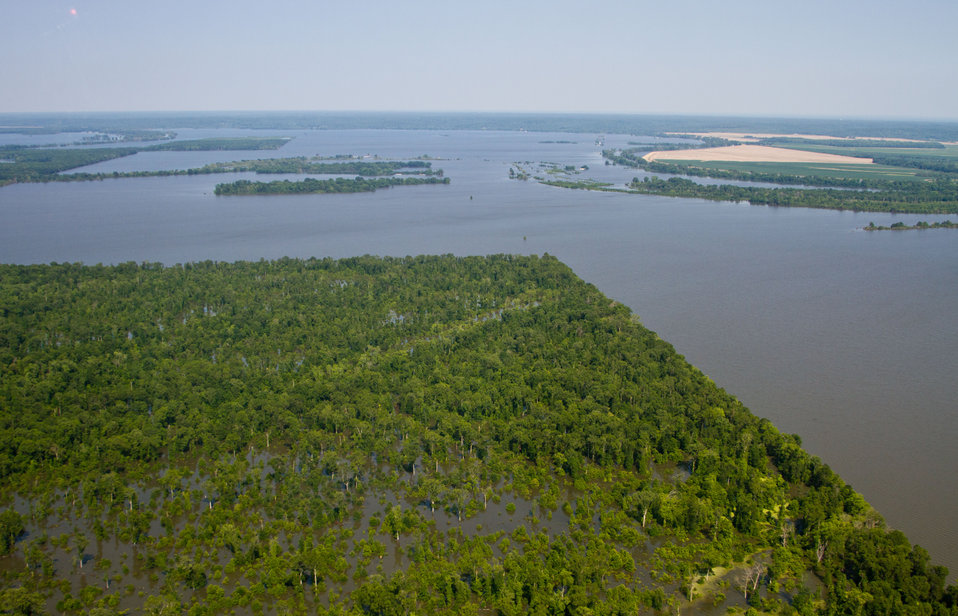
Aerial view of Mississippi River flood of farms, wilderness, and populated areas, on Thursday, May 19, 2011. from the MS side. Aerial platform was a UH-60 Blackhawk commanded by Col. Kennedy and his flight crew from the Army Aviation Support Facility #1 at Hawkins Field in Jackson, MS.